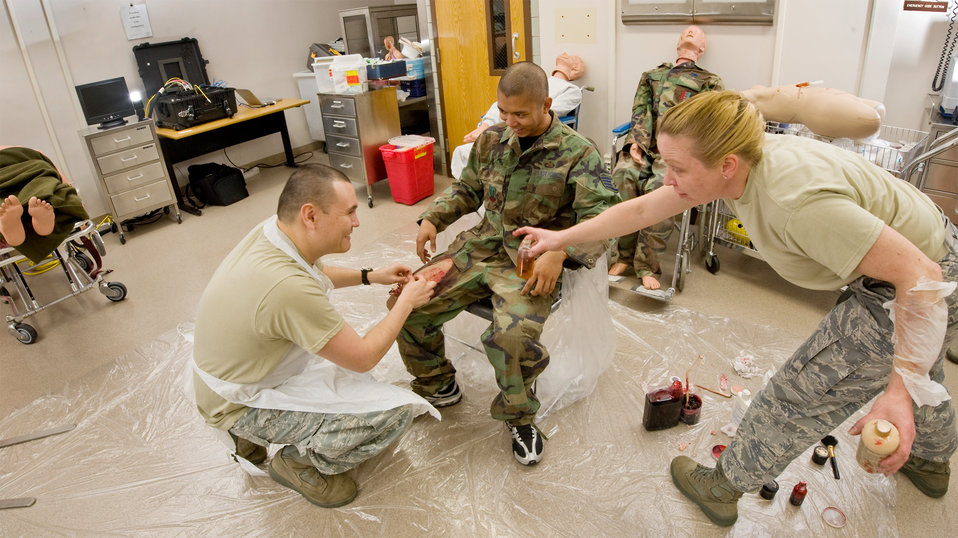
Must have More Blood

Tech. Sgt. Tricia Carnes (right) hands a bottle to Staff Sgt. Kevin Davis, (moulage artist) as he creates a simulated compound fracture on Staff Sgt. Nomer Evangelista during a proficiency training session on Mar. 23, 2010 at Ellsworth Air Force Base, S.D. Sergeants Carnes, Evangelista and Davis are the 28th Medical Support Squadron’s NCOICs Medical Readiness and Pharmacy Automation and Assistant NCOIC Resource Management. On Carnes' arm is petroleum jelly and tissue paper, which will become a burn blister and damaged skin. Readiness training at the 28th Medical Support Squadron uses industry leading moulage skills, techniques and education to keep their mass casualty exercises as realistic as possible. A variety of household and theatrical products, and specialized devices keep burns, blisters, bruises and shrapnel fresh and in their place.